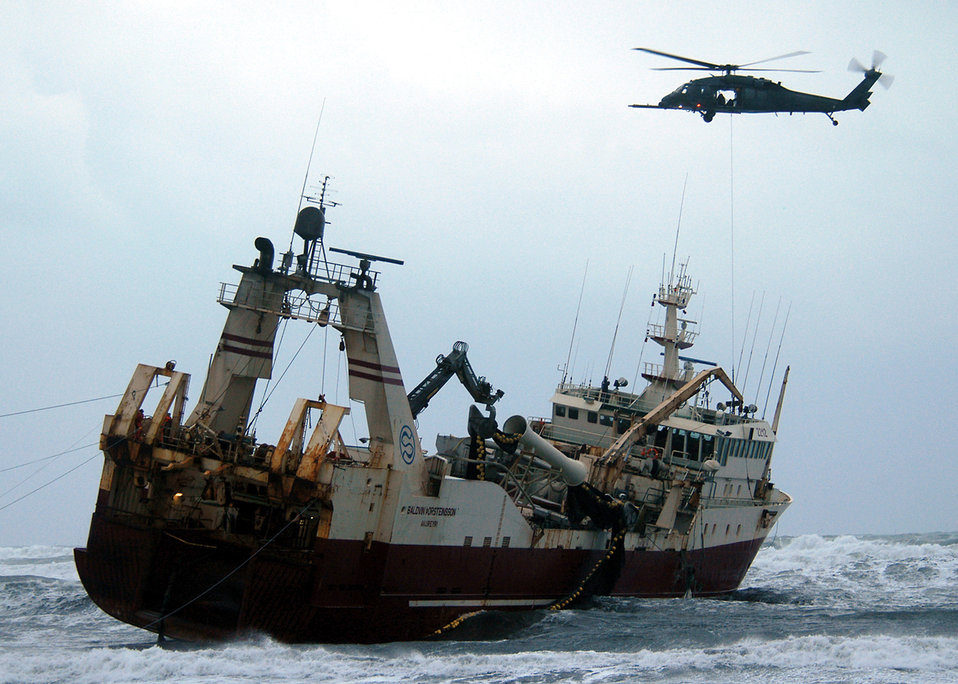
To the rescue

NAVAL AIR STATION KEFLAVIK, Iceland- -- A HH-60G Pave Hawk helicopter from the 56th Rescue Squadron provides heavy lift/sling load support to the fishing trawler, the Baldvin Thorsteinsson. The 56th Rescue Squadron, along with members of the 85th Maintenance Squadron, recently played a key role in the recovery efforts of the fishing trawler, which had been stranded on a sand bar off Iceland's southern coast for three days.